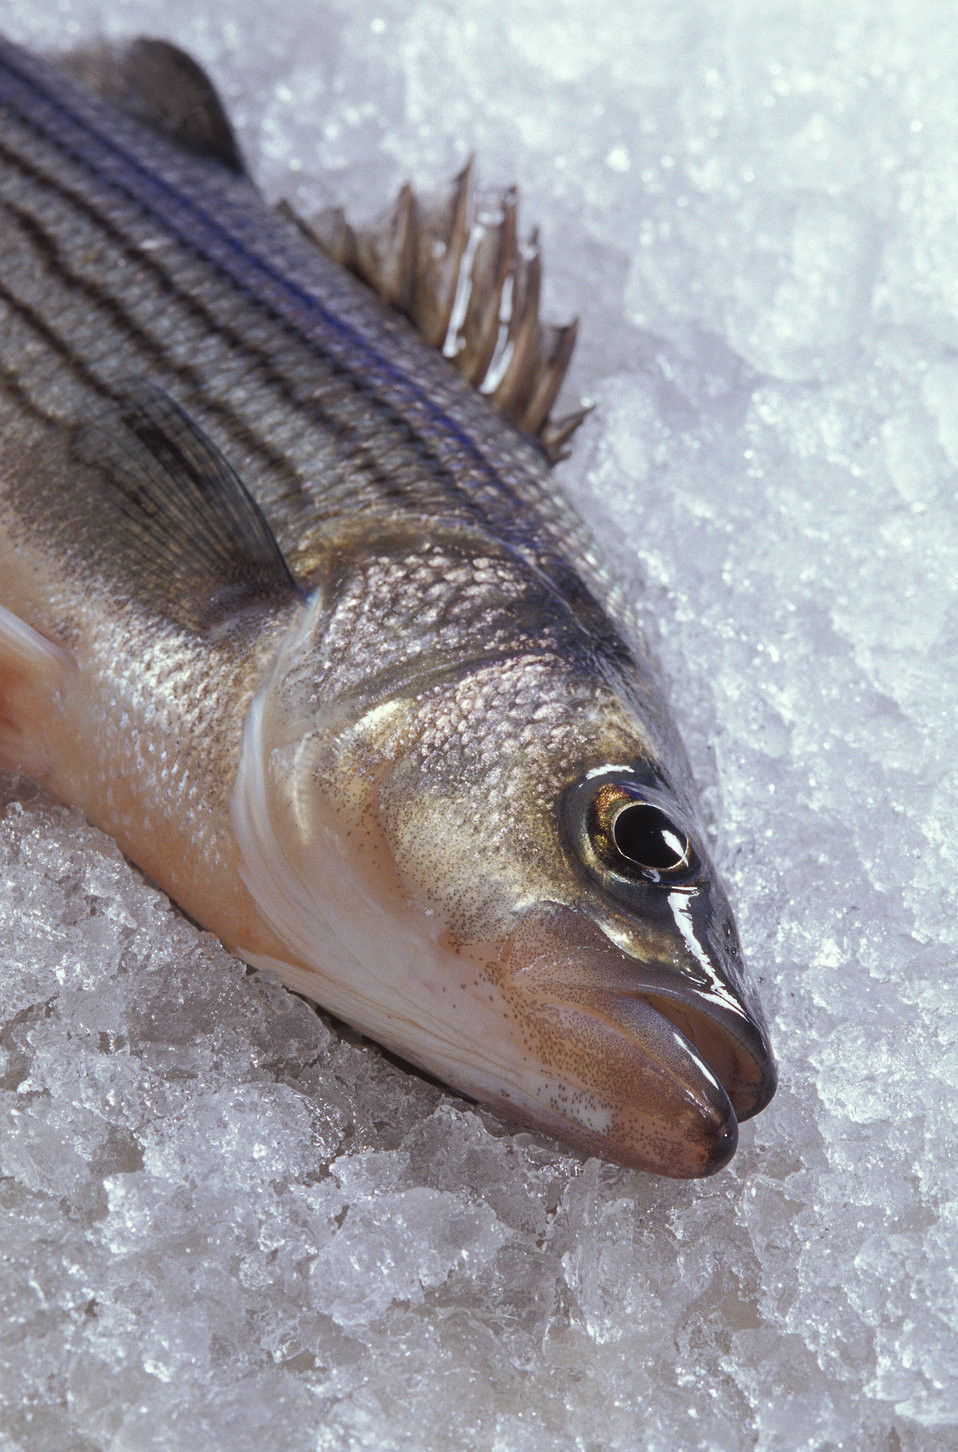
A Hybrid striped bass, also known as sunshine bass rest on ice to preserve freshness.